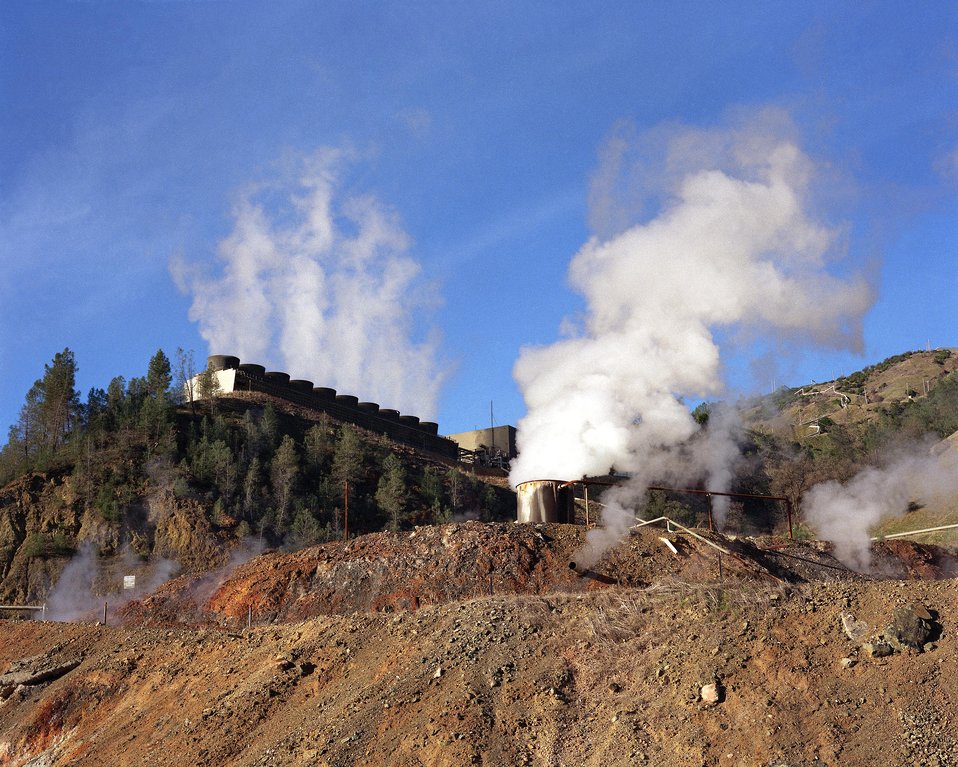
DRY STEAM GEOTHERMAL POWER PLANT AT THE GEYSERS IN CALIFORNIA.

THE GEYSERS GEOTHERMAL POWER PLANT IN CALIFORNIA IS THE LARGEST PRODUCER OF GEOTHERMAL POWER IN THE WORLD.